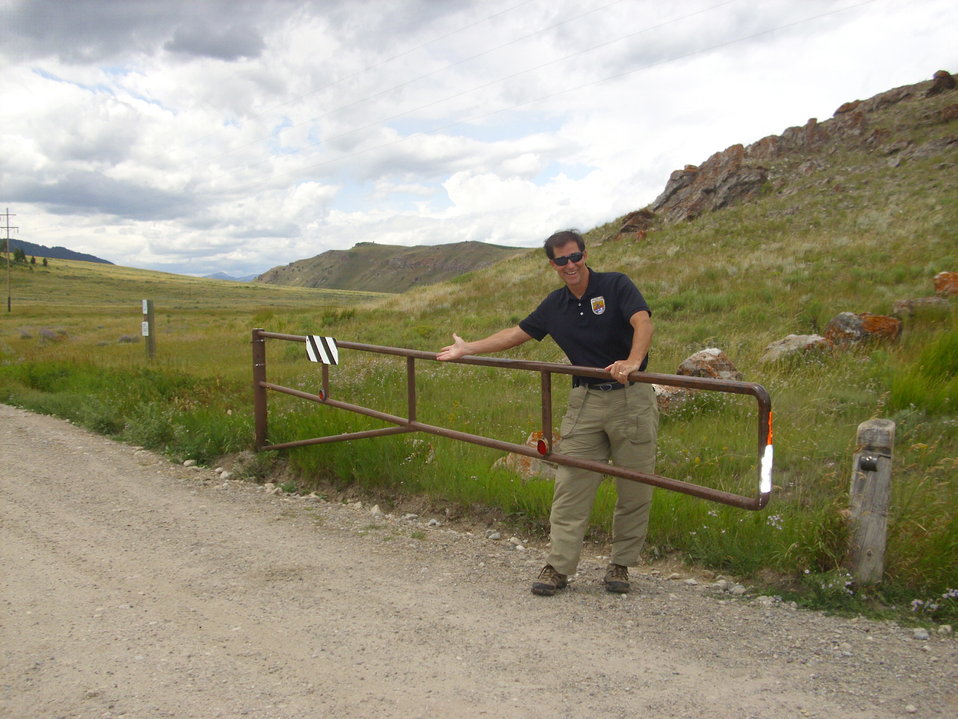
Dan Stops by National Elk Refuge

Dan does 'gate duty' at the National Elk Refuge.